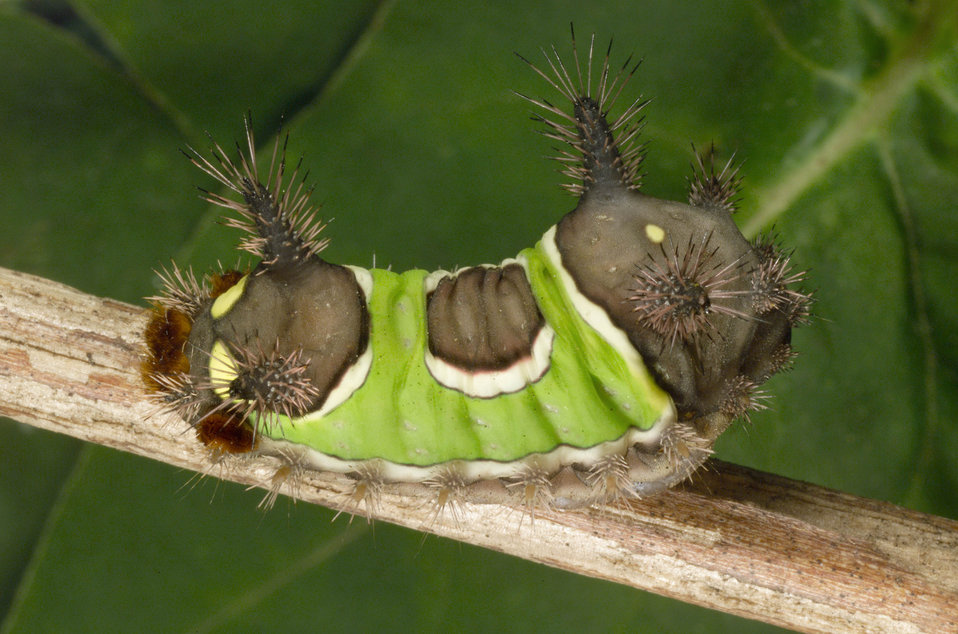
This 2001 photograph depicted a superior oblique view, or from the upper right, of a poisonous saddleback caterpillar, which is actually the 'instar' or developmental stage through which the saddleback caterpillar moth, Sibine stimulea passes on its way to becoming an adult, or 'imago', moth.